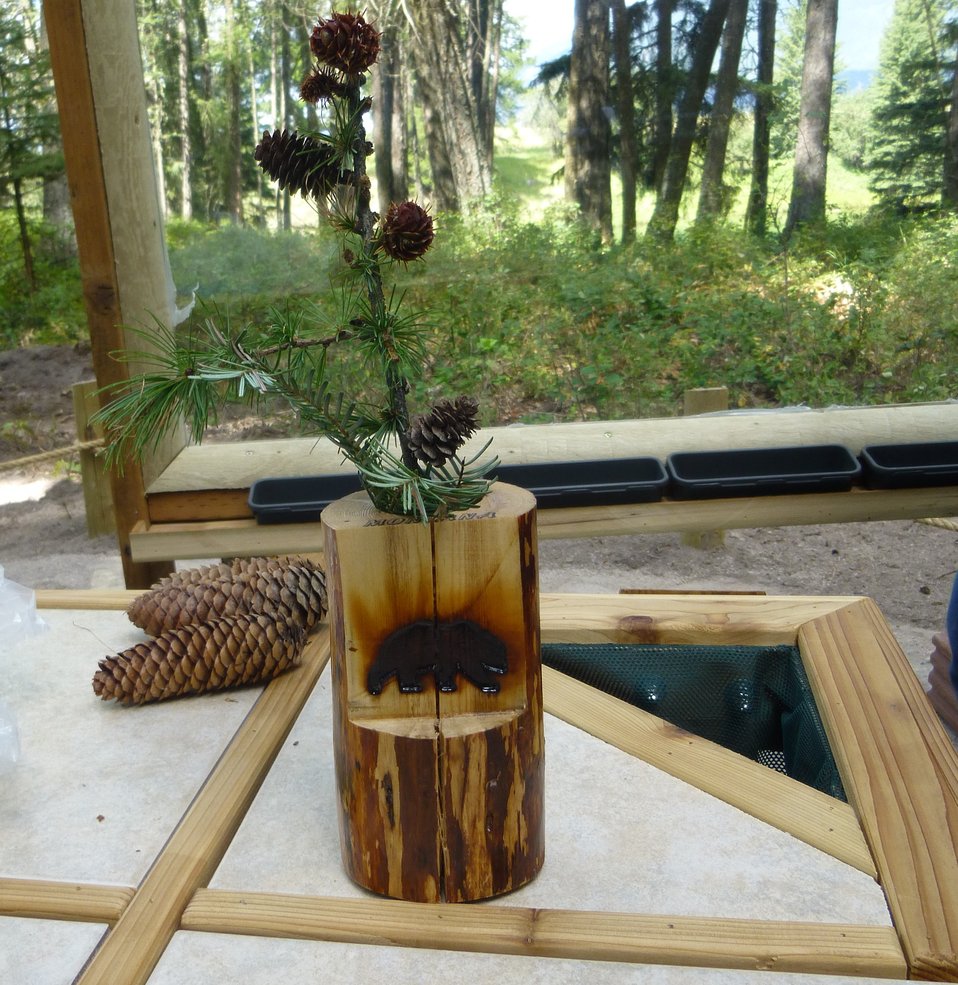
Creston's Nature Explore Outdoor Classroom

Children can explore interesting ways to arrange and explore natural materials in the Art Area at Creston NFH's Outdoor Classroom.